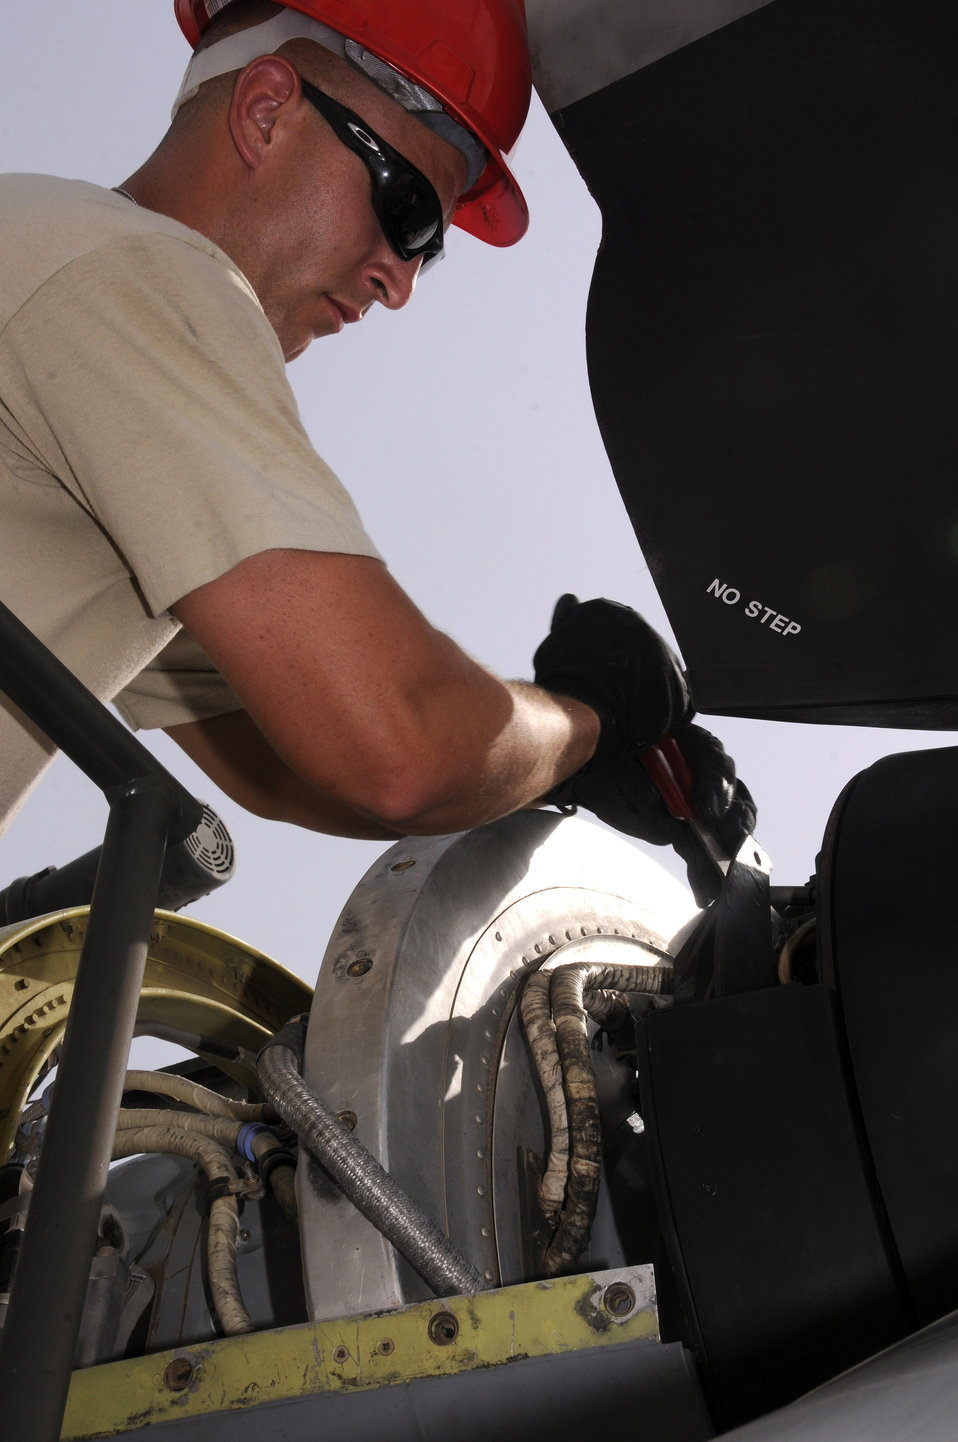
Airmen improve processes to increase efficiency

Senior Airman Beau Columbus loosens a bolt attaching the propeller to the shaft of a C-130 Hercules engine July 23 at a Southwest Asian air base. Members of the Central Intermediate Repair Facility remove and install C-130 engines. Airman Columbus is assigned to the 379th Expeditionary Maintenance Squadron Propulsion Shop deployed from Yokota Air Base, Japan.